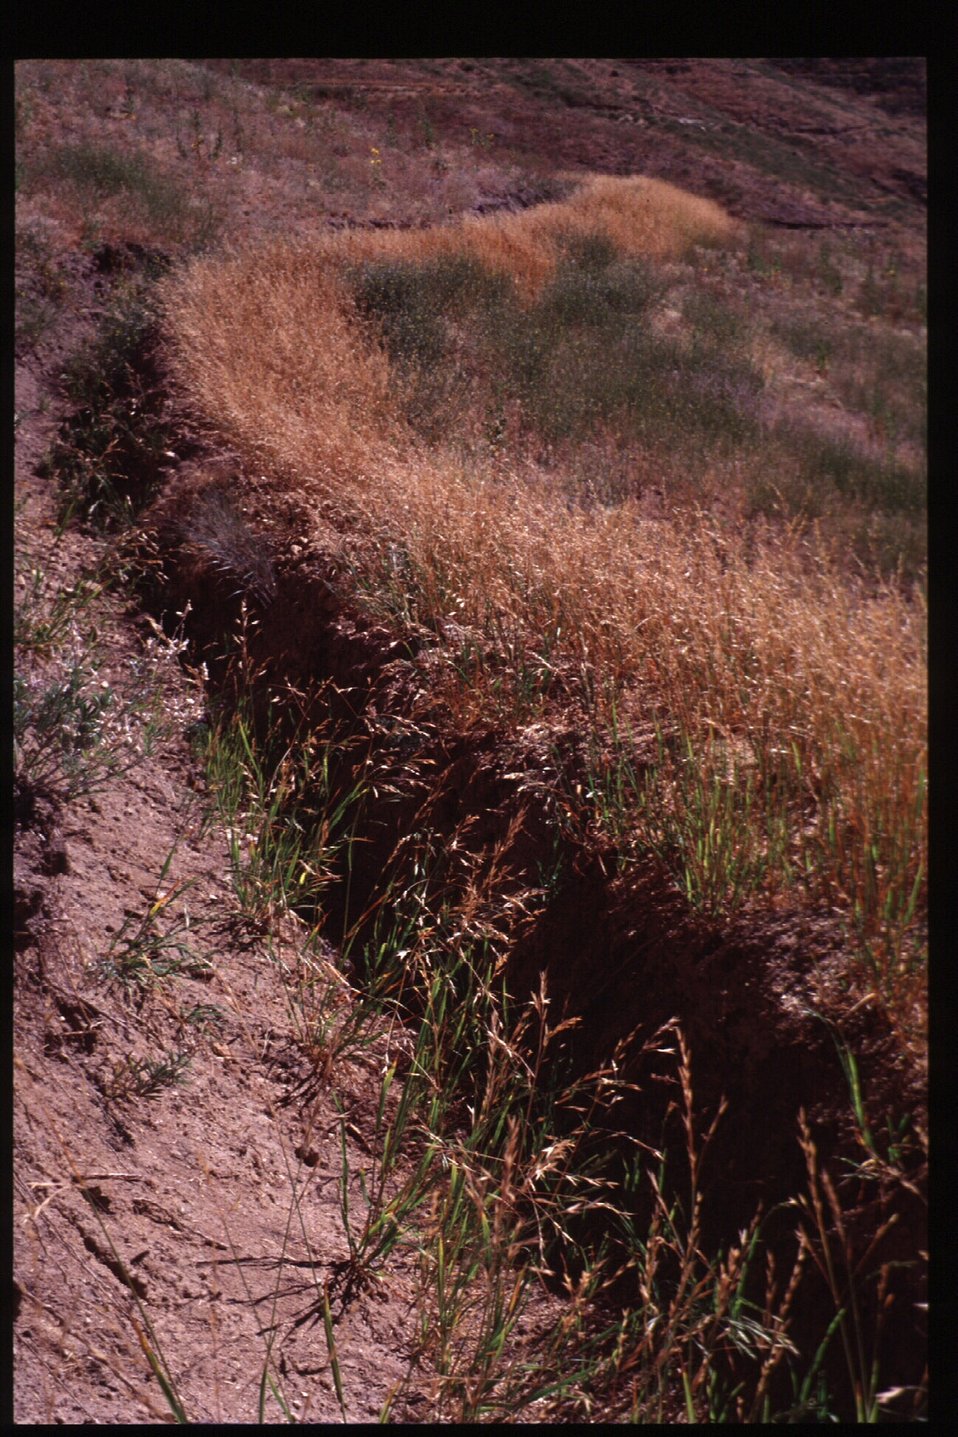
8th Street Fire Four Rivers Field Office LSRD Lower Snake River District